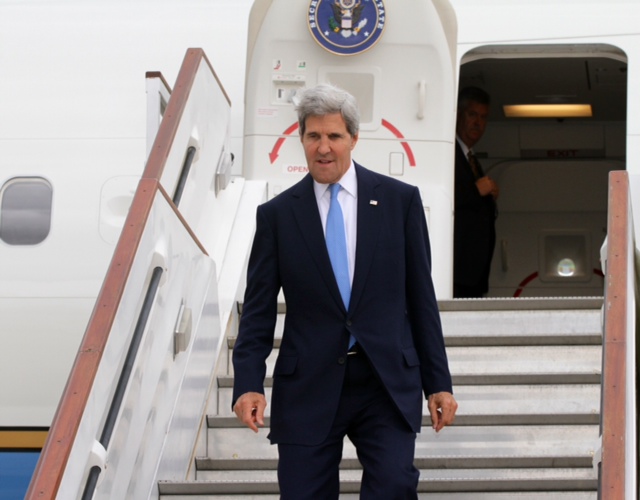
Secretary Kerry Arrives in London

U.S. Secretary of State John Kerry arrives in London, United Kingdom on September 8, 2013.